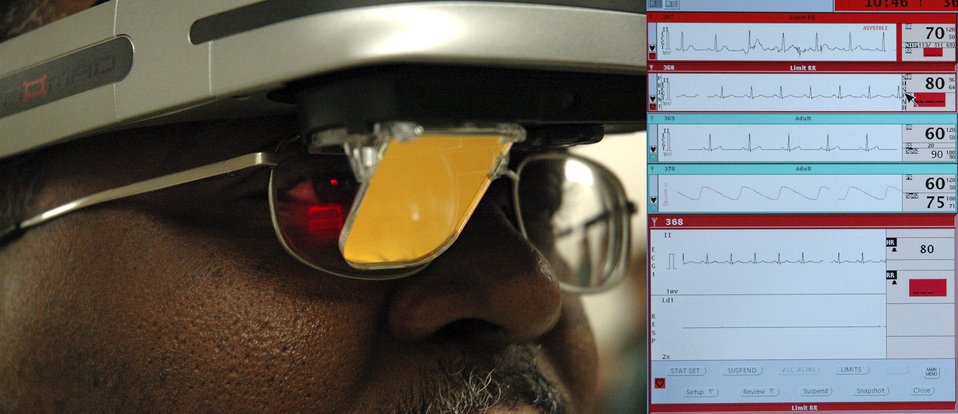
Technology offers high-tech patient monitoring

Col. (Dr.) James Henderson, director of the Air Force Expeditionary Medical Skills Institute, views a patient's vital signs (enlarged at right) through a medical heads-up display. Colonel Henderson is a member of the critical care air transport team executive council.